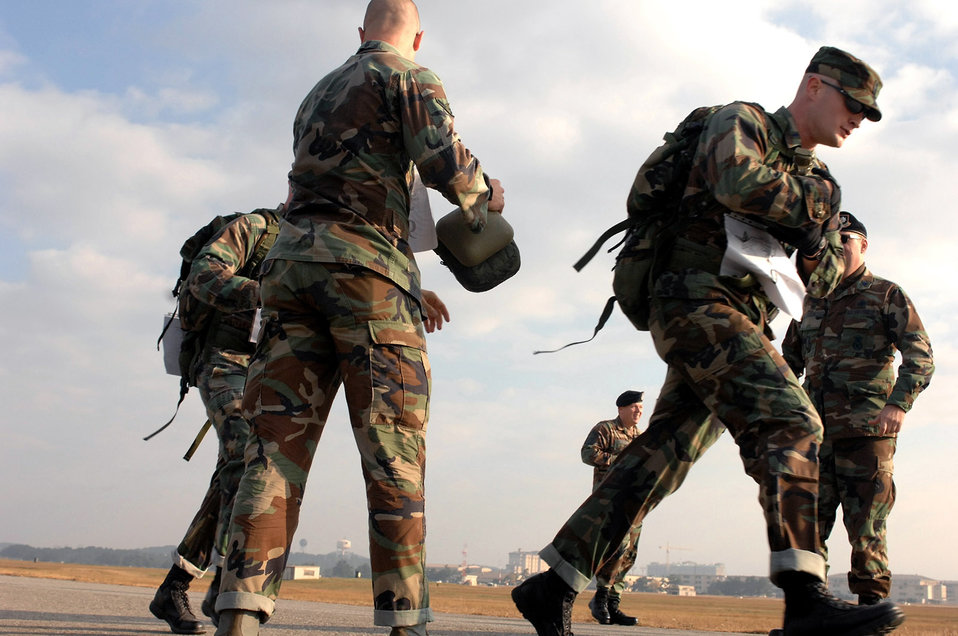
Running a ruck

Airman Jarves Butler passes canteens to his teammates, 1st Lt. Brett Skates and Senior Airman Dustin Manning, during the first Veterans Day Memorial Ruck/Run held Nov 17 at Kunsan Air Base, Republic of Korea. The Airmen are members of the 8th Security Forces Squadron. Ten teams, each comprising four members, participated in a 10K march carrying 40 pound ruck sacks followed by a 1.5 mile run. Teams from the Republic of Korea air force joined U.S. teams from Kunsan and Osan air bases for the competition in an effort to build teamwork and camaraderie.